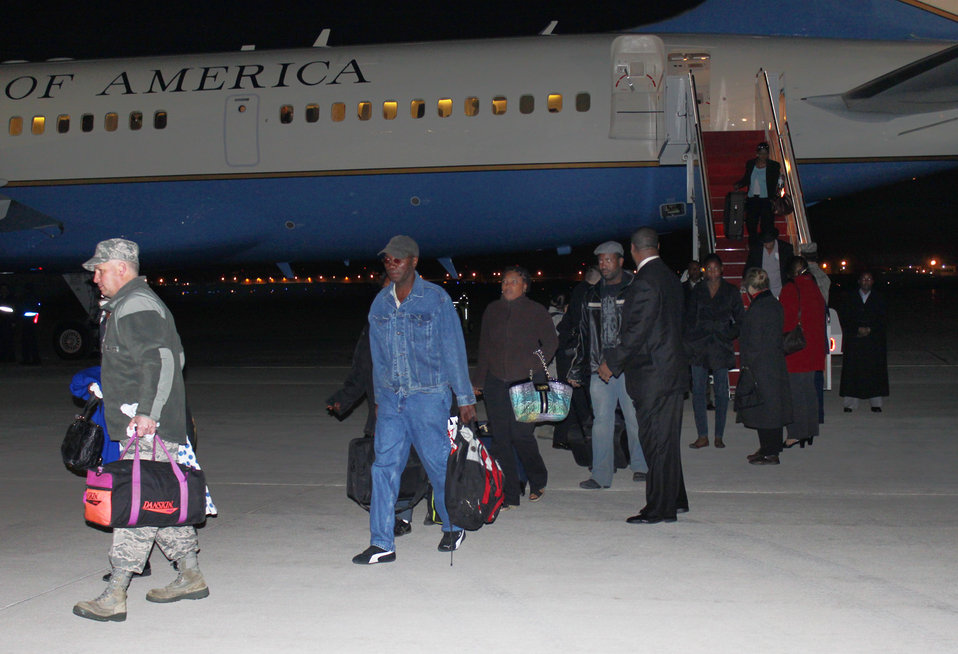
Haitian earthquake survivors arrive at Joint Base Andrews

Colonel John Long, 316th Mission Support Group commander, left, helps repatriated U.S. citizens with their luggage as they disembark from an 89th Airlift Wing C-32 Jan. 17, 2010. Secretary of State Hillary Clinton traveled to Joint Base Andrews with 22 survivors of the 7.0-magnitude earthquake that hit Haiti Jan. 12. In Haiti, the secretary met with Haitian President Rene Preval and pledged U.S. aid in the country’s relief effort. The survivors were met upon arrival here by a medical team consisting of 79th Medical Wing personnel, Prince Georges County emergency technicians and Red Cross workers who ensured the passengers were in good health.